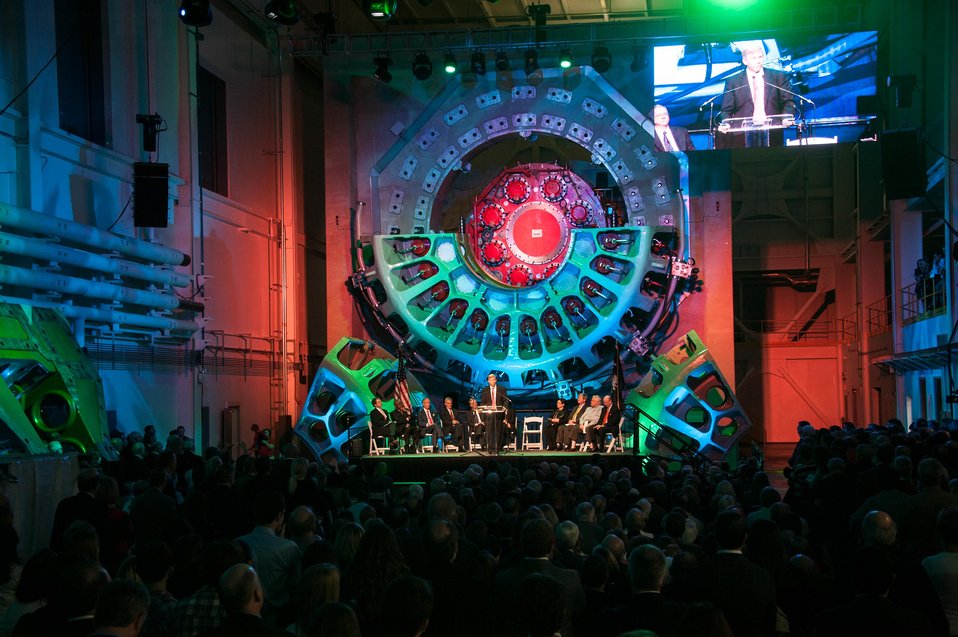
DEPUTY SECRETARY PONEMAN VISITS SAVANNAH RIVER NATIONAL LABORATORY AS THEY JOIN FORCES WITH CLEMSON UNIVERSITY IN THE FACILITY FOR TESTING OF NEXT-GENERATION WIND TURBINE AND ELECTRICAL GRID TECHNOLOGY.

This public-private collaboration in electrical energy research, education and testing will be capable of full-scale, highly accelerated testing of next-generation wind turbine technology. The electric Grid lab's 15 MW Hardware-in-the-Loop simulator will manufactures to test both the mechanical and electrical characteristics of their machines in a controlled and calibrated environment. The grid simulator will be the highest power experimental utility-scale facility in the world, combining testing of energy sources with advanced power instruments and systems.